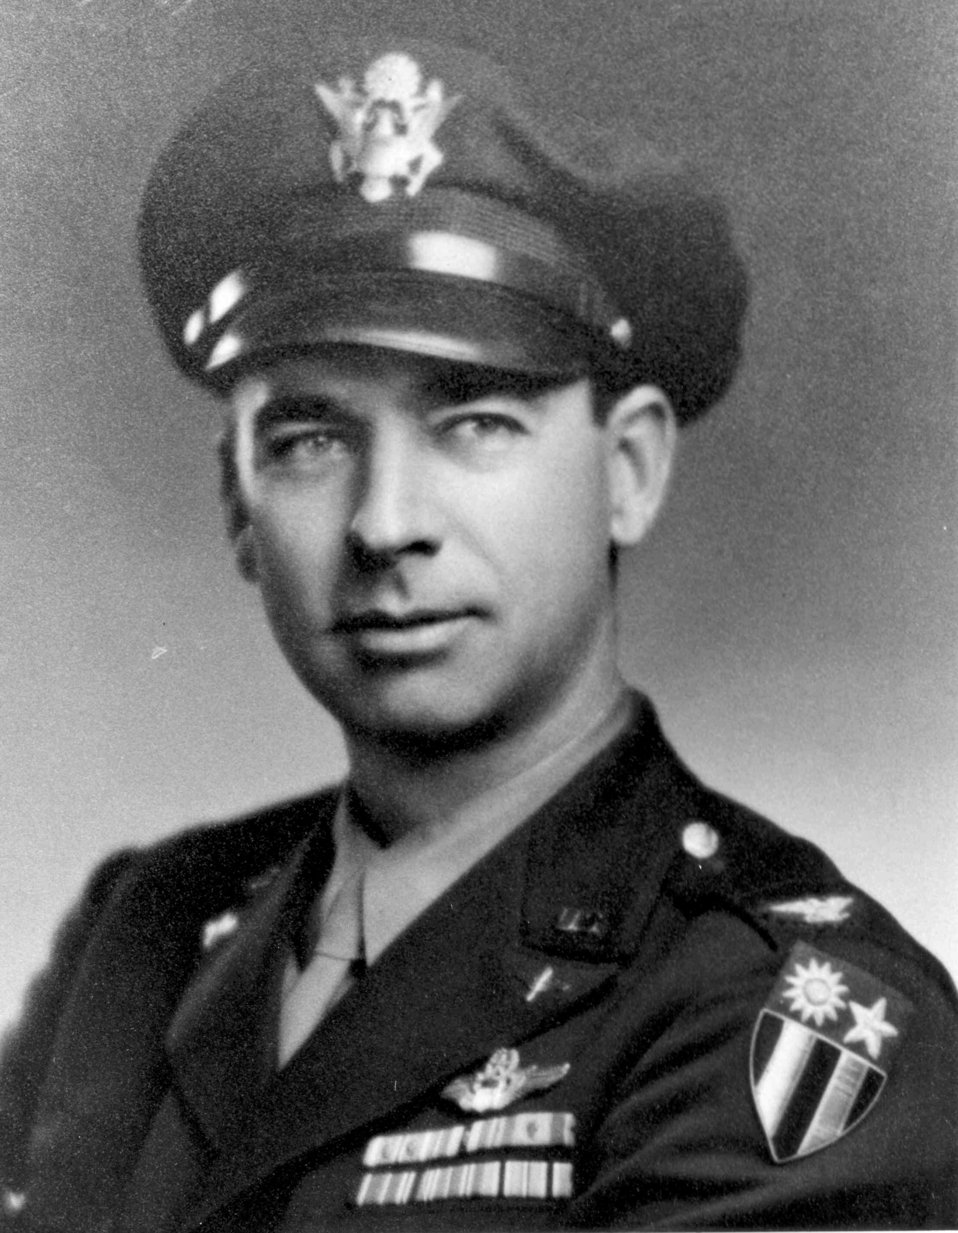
Brig. Gen. Robert L. Scott Jr. dies

The 1943 official photo of Col. Robert Scott.